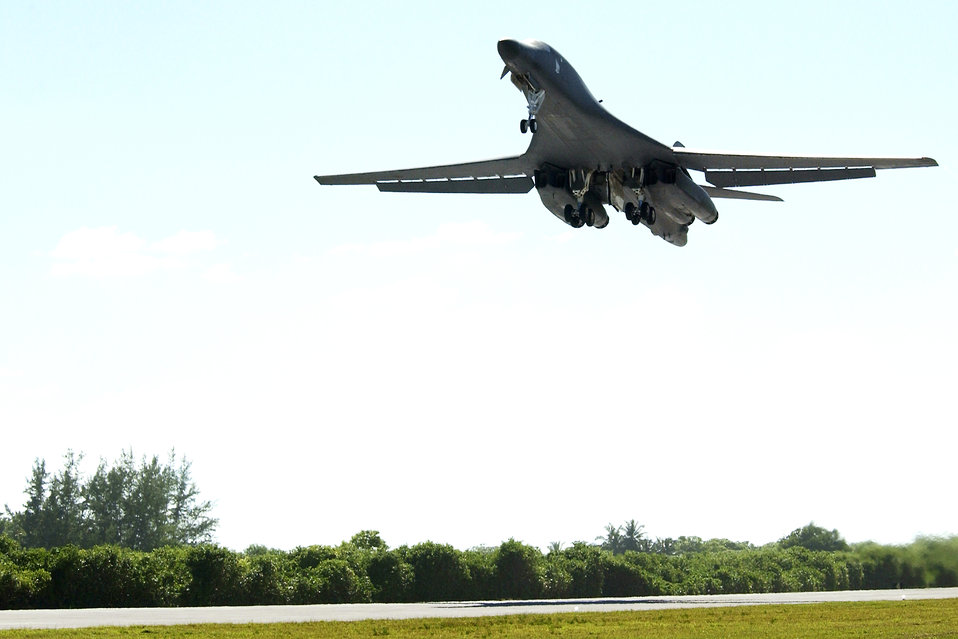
Bomb's away!

OPERATION ENDURING FREEDOM -- A B-1B Lancer takes off from a forward-deployed location.